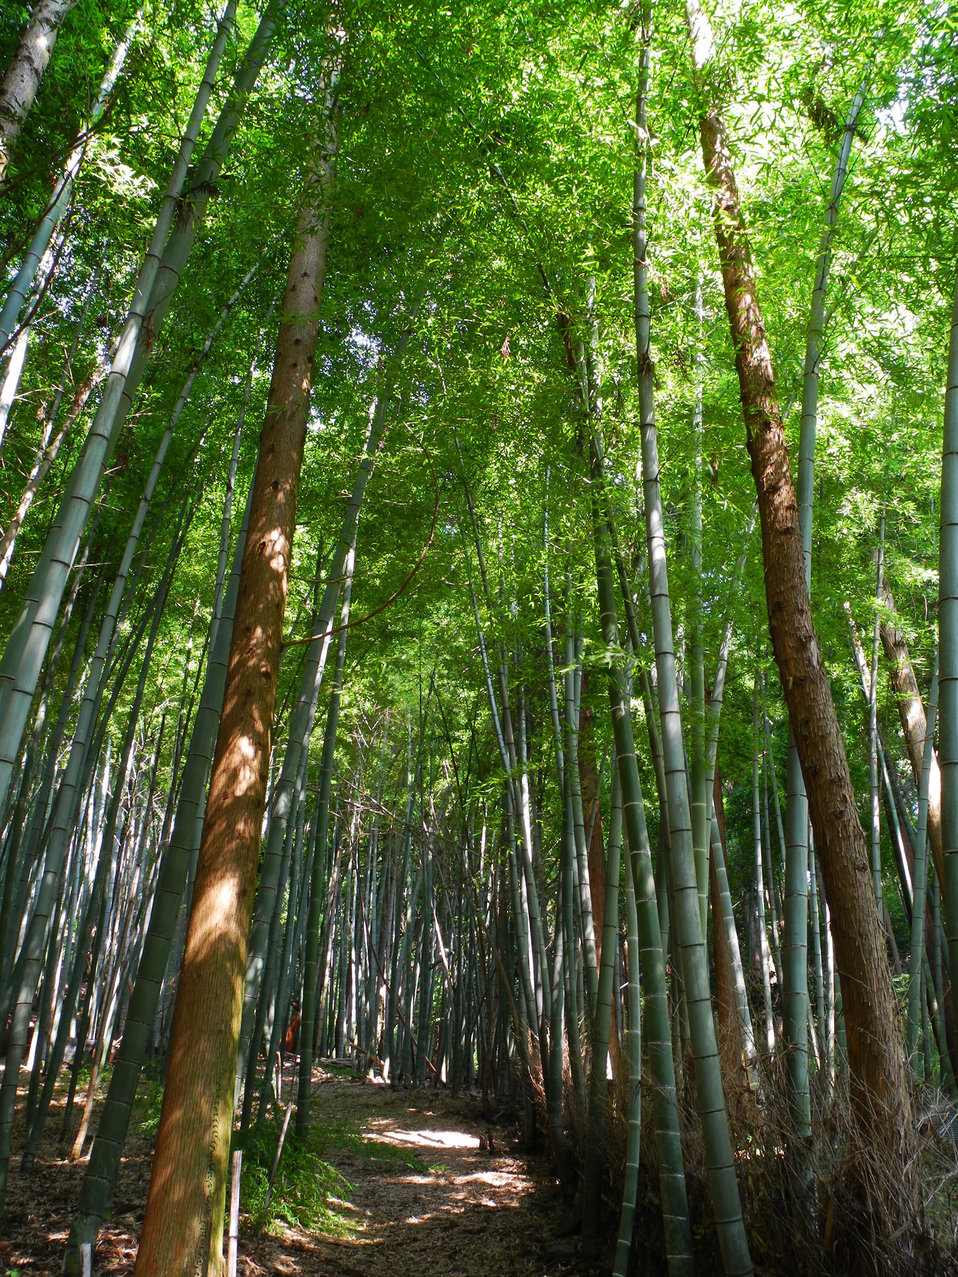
Bamboo forest.